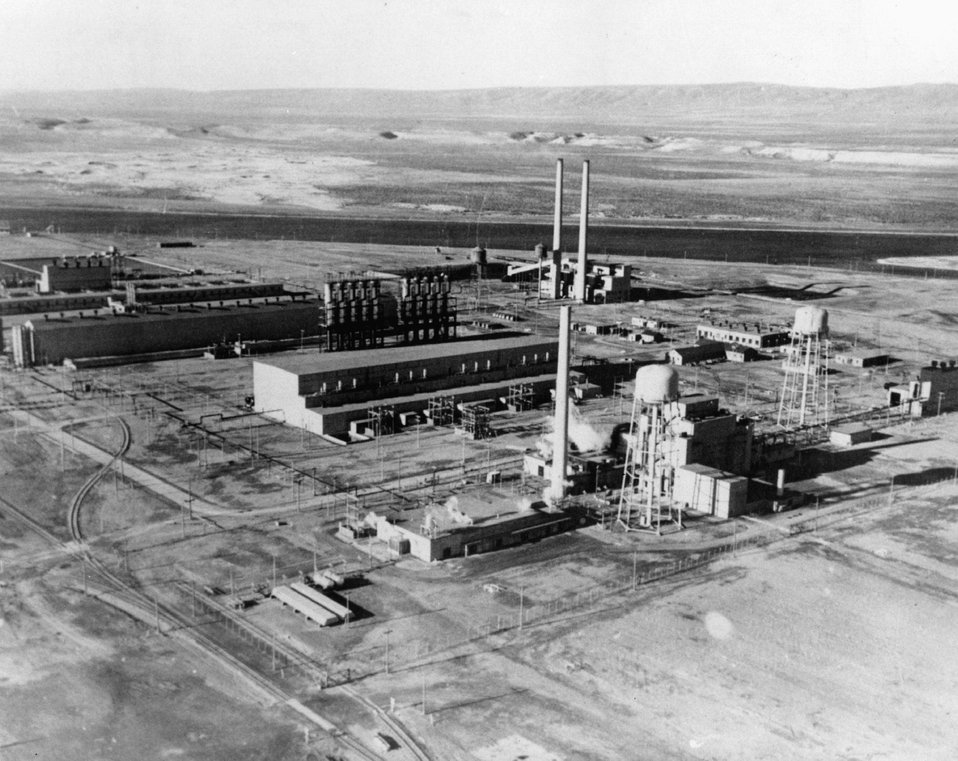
The third process separations facility, U-Plant, was identical to B (East Area) and to T (West Area). c. undated